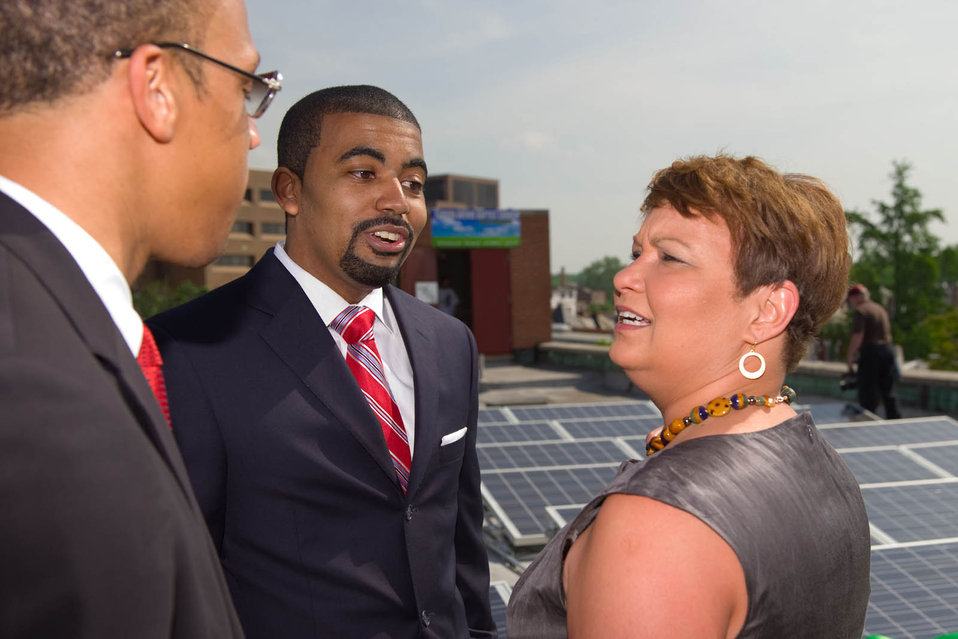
2011-05-03 FlaAveSolar 005